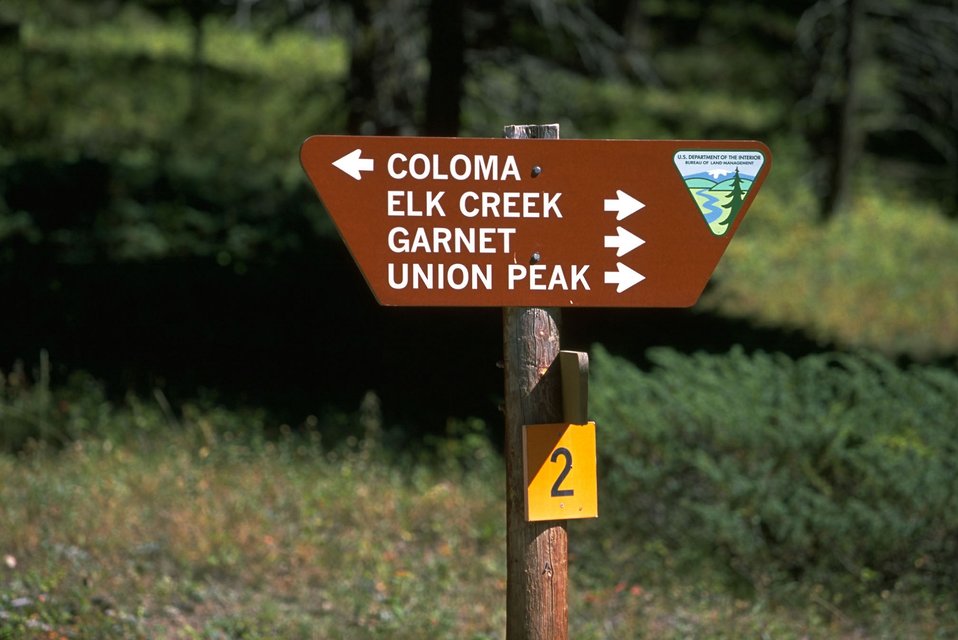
Directional sign on Garnet Back Country Byway